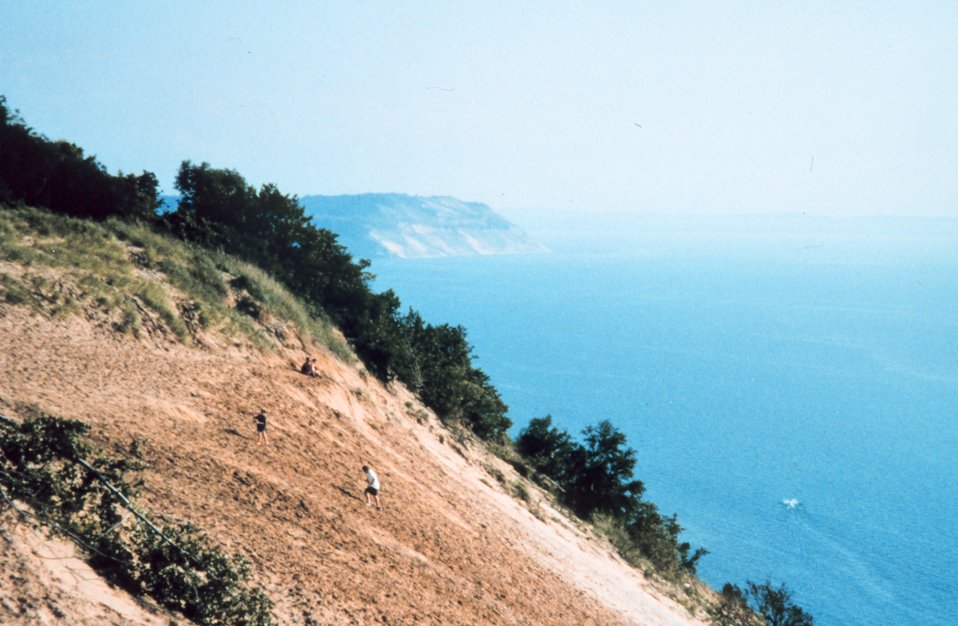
Looking south